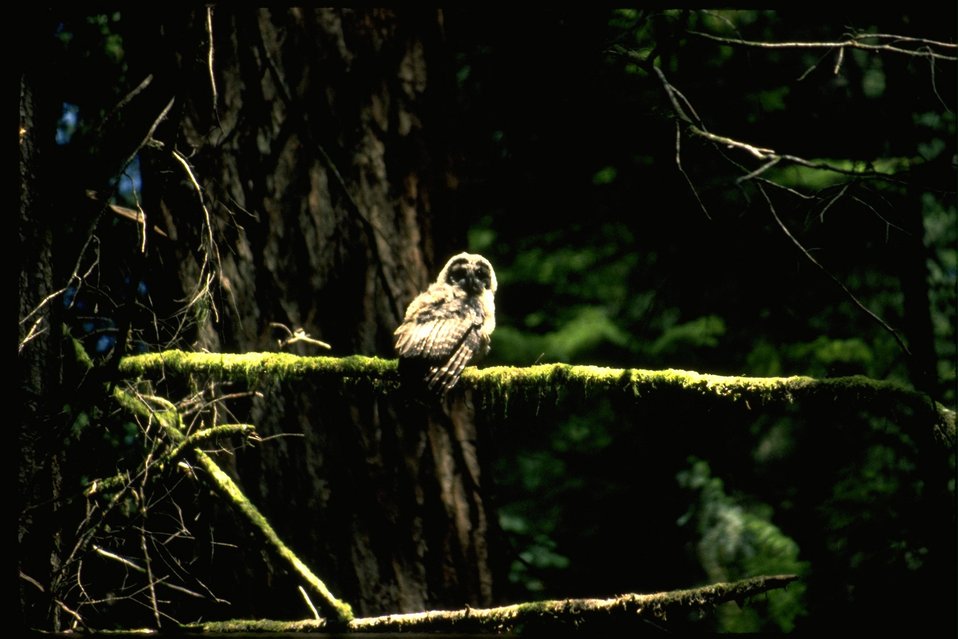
Baby Northern Spotted Owl at Doe Creek.